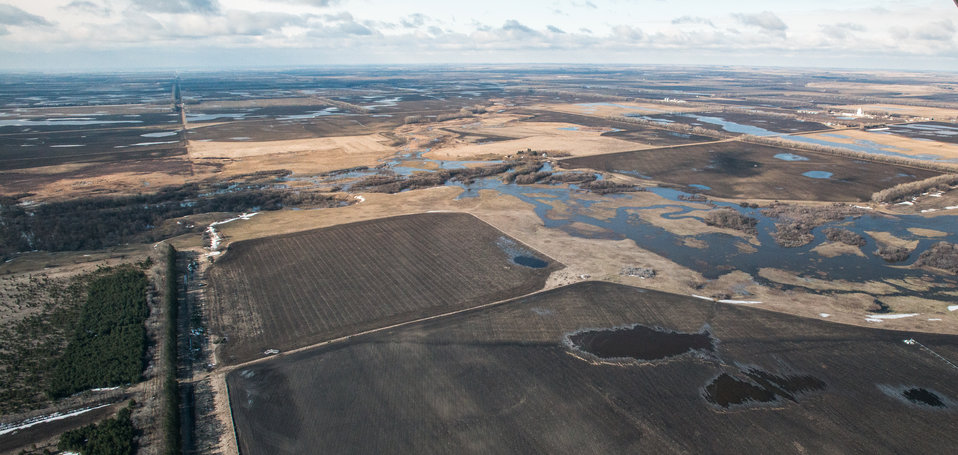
Proposed Dam site #10, on Turtle River Watershed in Grand Forks County, ND, part of the Red River basin, on Wednesday, May 1, 2013. To learn about the Red River Basin Initiative, see www.mn.nrcs.usda.gov/news/features13/RRBI.html.